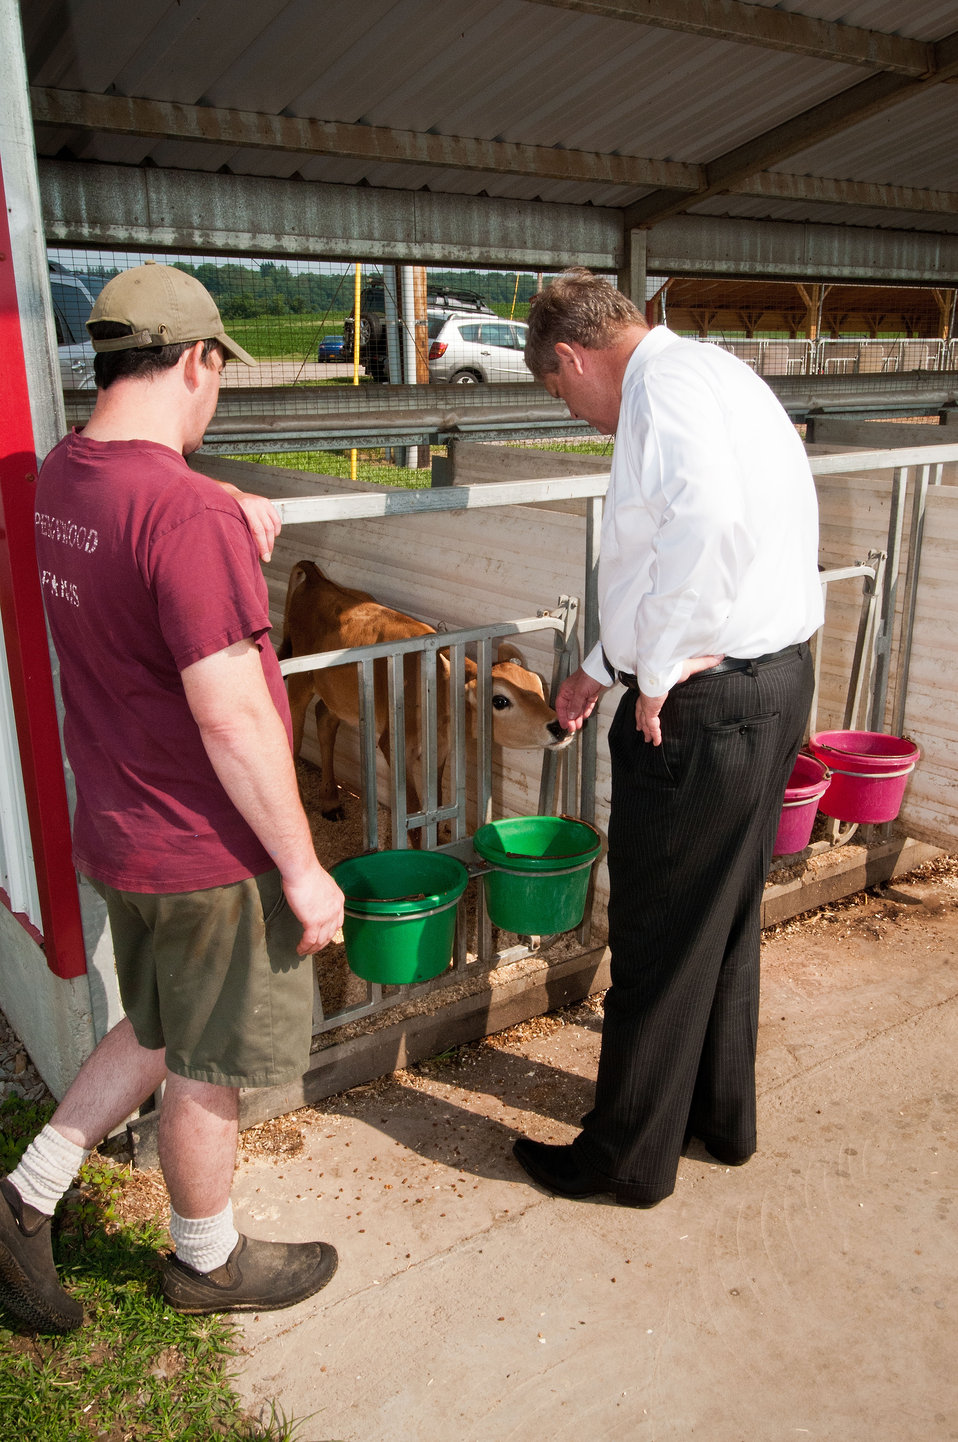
Don Stoltzfus (left), and Agriculture Secretary Tom Vilsack view a future producer at the Stoltzfus family business Pennwood Dairy Farms in Berlin, PA on Tuesday, July 17, 2012. During his visit Secretary Vilsack highlighted the U.S. Department of Agriculture’s (USDA) energy efficiency programs and announced a new effort to help rural consumers make affordable, energy-efficient improvements to their homes and businesses. Pennwood Dairy Farms uses an anaerobic digester to produce energy for the dairy. An anaerobic digester is a component of a waste management system that captures biogas for energy production. The digester is also part of a planned conservation management system that manages manure as a comprehensive nutrient management system.